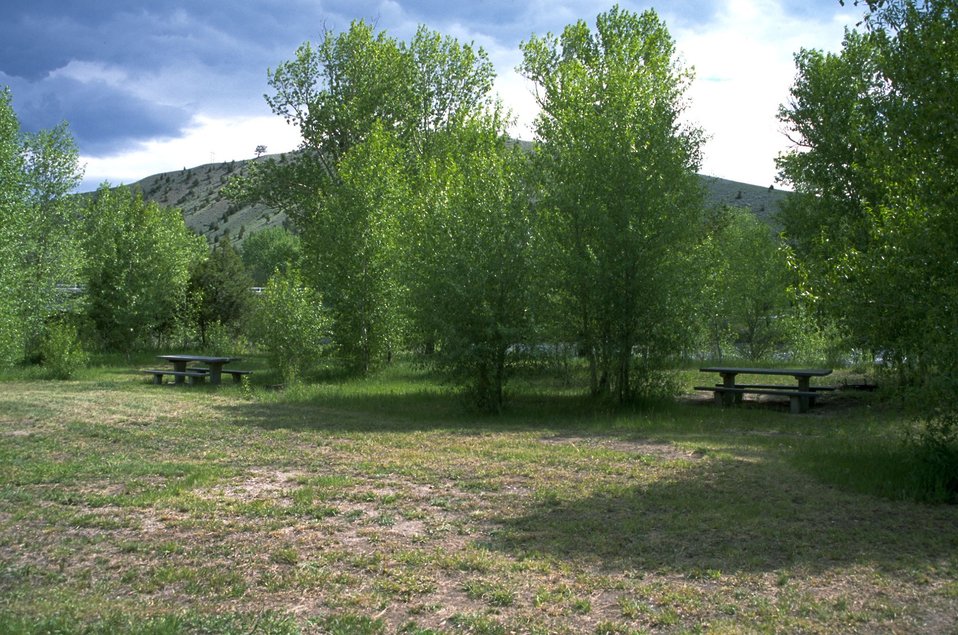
Picnic area at Divide Day Use Area